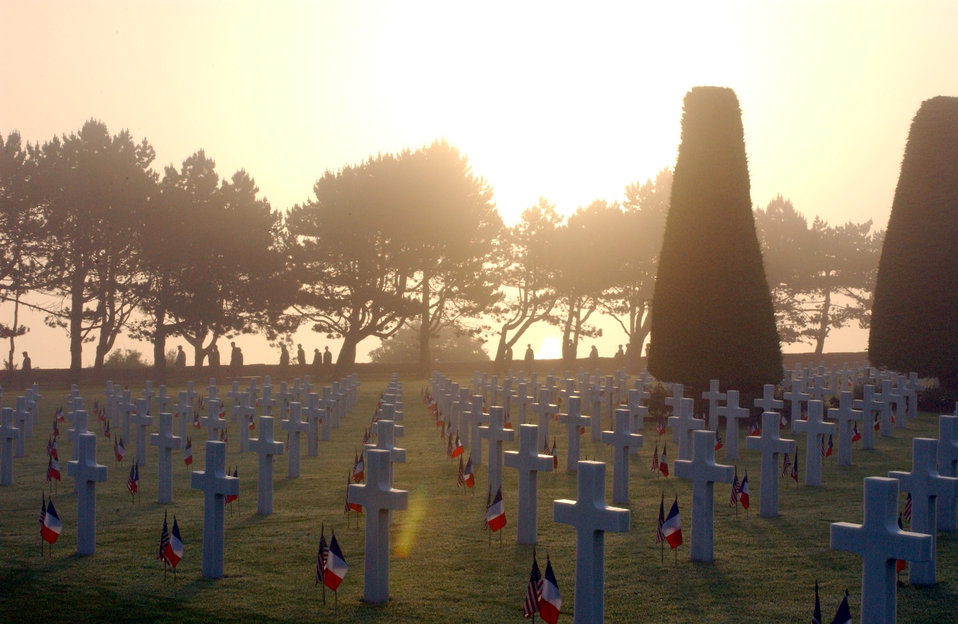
D-Day remembered

COLLEVILLE SUR MER, France -- The sun rises over the American Military Cemetery here, above the Omaha Beach section of Normandy on June 6, exactly 60 years after the D-Day invasions of World War II.